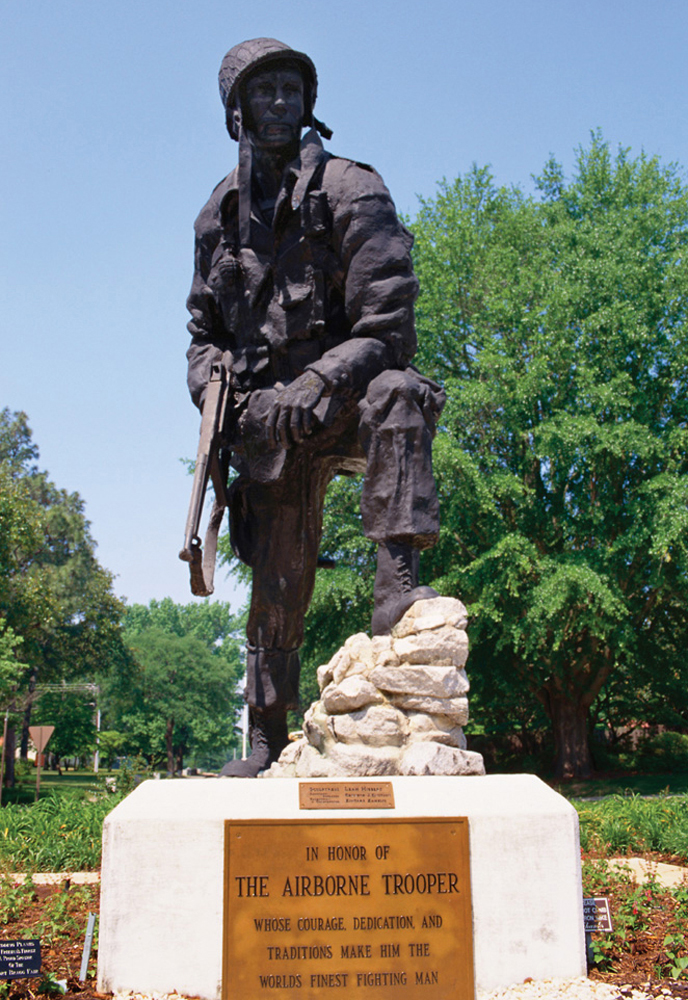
Army presents ?Iron Mike? to AMC for Haiti airlift support

Lt. Gen. Frank Helmick recently presented an Iron Mike statuette to Gen. Raymond E. Johns Jr. for the support the Air Mobility Command provided in transporting the 82nd Airborne Division into Haiti to provide relief. General Helmlick is the commander of the 18th Airborne Corps and General Johns is the commander of AMC.